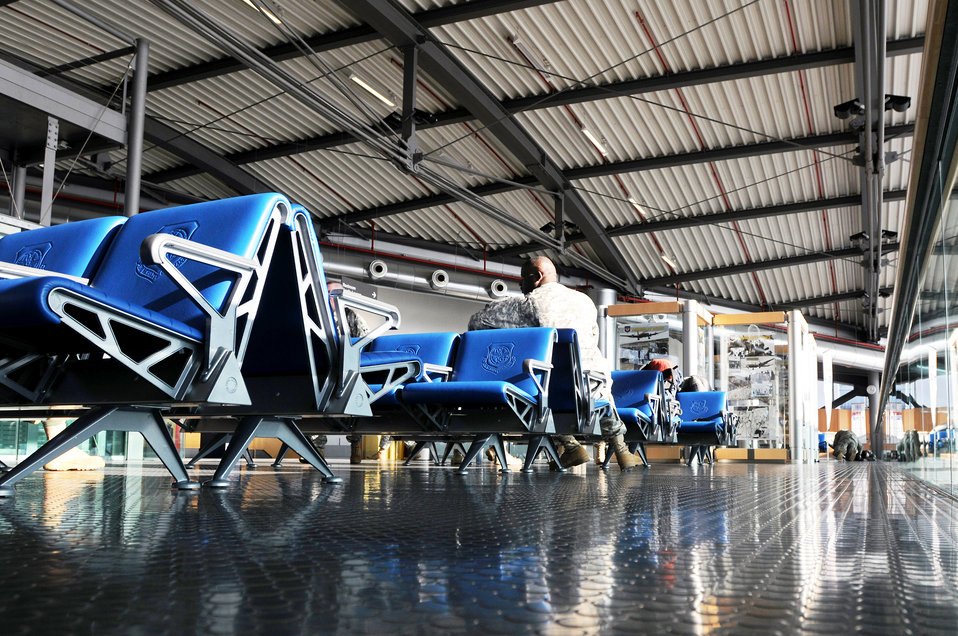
Flexibility key to airpower, Space-A

The Ramstein Passenger Terminal operated by members of the 721st Aerial Port Squadron offers frequent space-available flights, making it easy for military personnel and their families to travel to and from the continental United States.